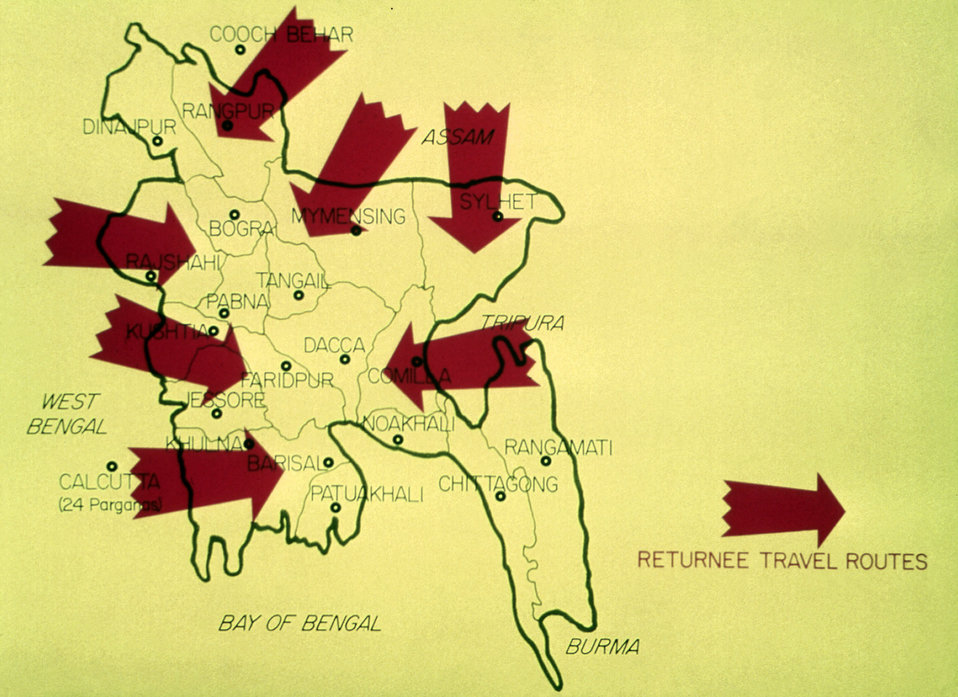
Maps such as this one, are integral to the science of epidemiology, and implementation of necessary public health practice, which in this case, succeeded in the eradication of smallpox.